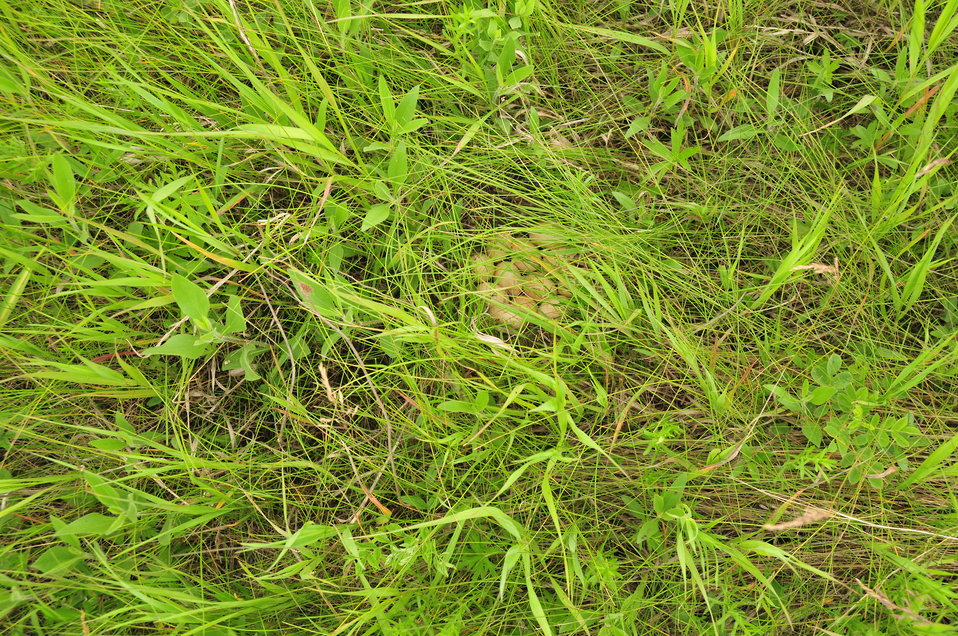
Blue-Winged Teal Nest in Native Prairie Sand Lake WMD